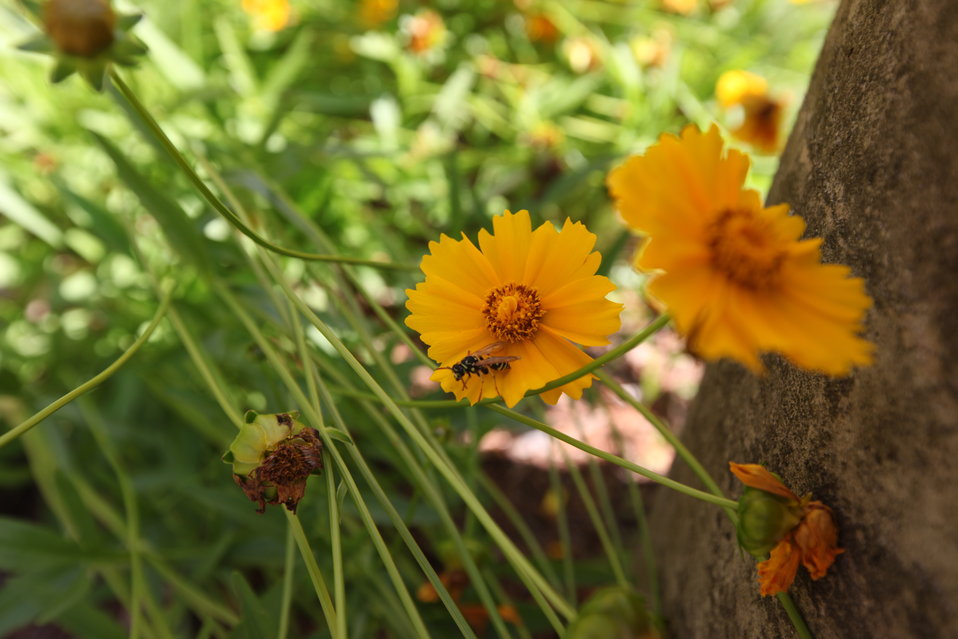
Flowers with Pollinator

Northeast Regional Office Pollinator Garden, Hadley, MA.